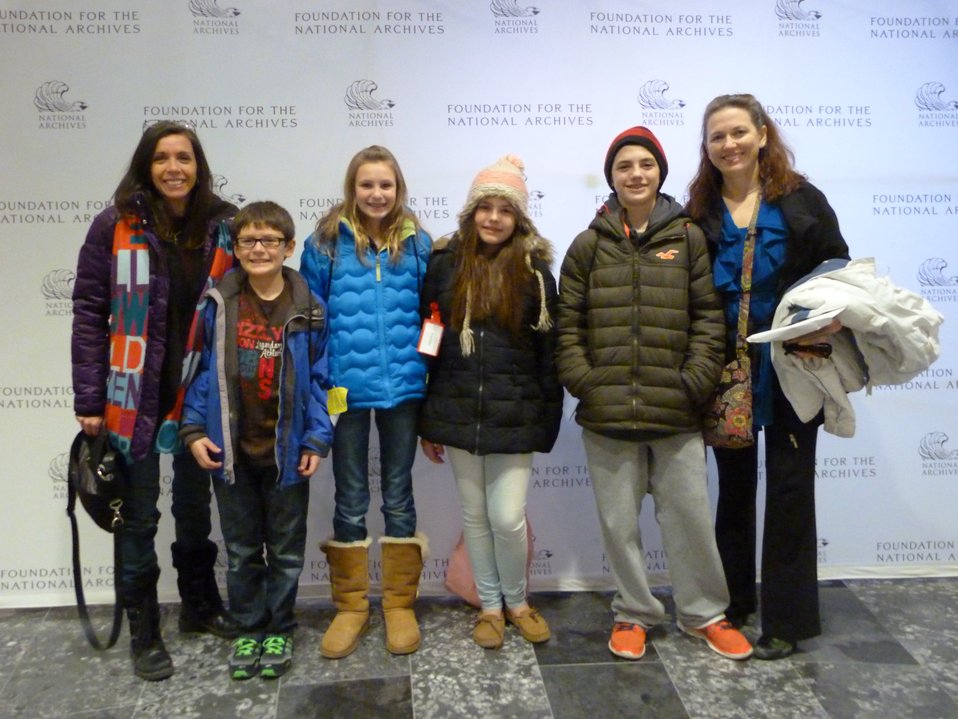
Rotunda Sleepover

Rotunda Sleepoverr; Photo provided by The Foundation for the National Archives